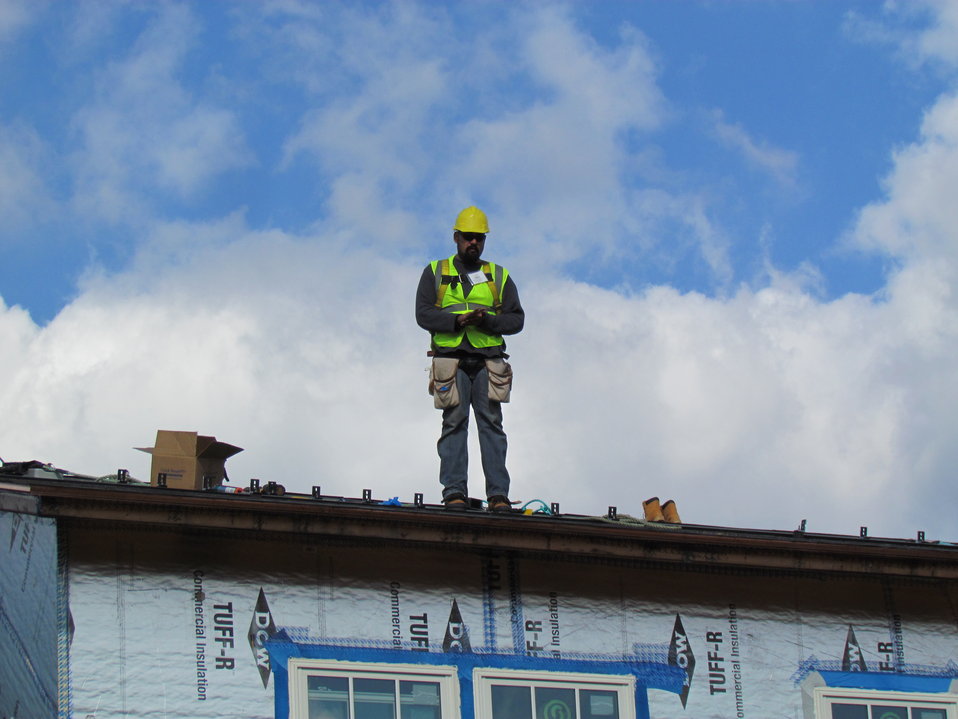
Net-Zero Energy Residential Test Facility - Workmen installing racks for solar photovoltaic panels.